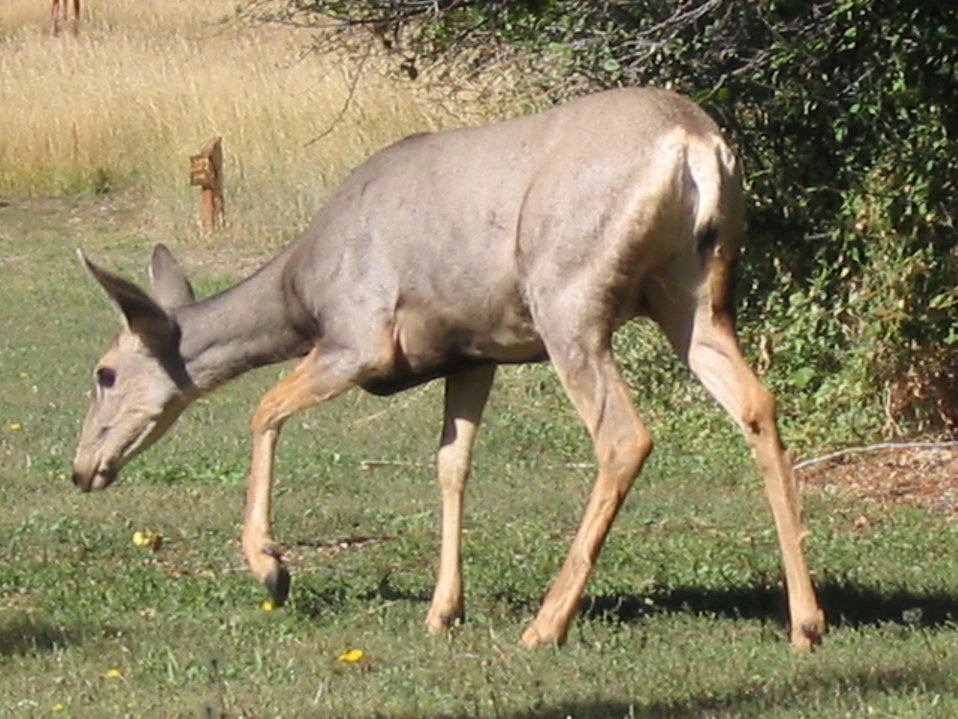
Deer